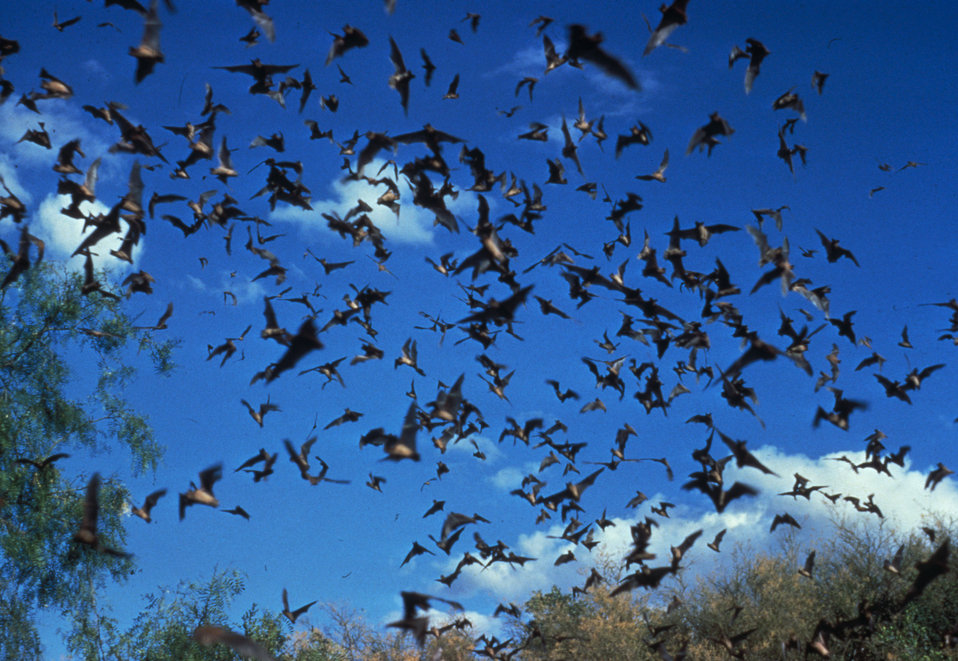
This horde of bats could contain possible carriers of the rabies virus.